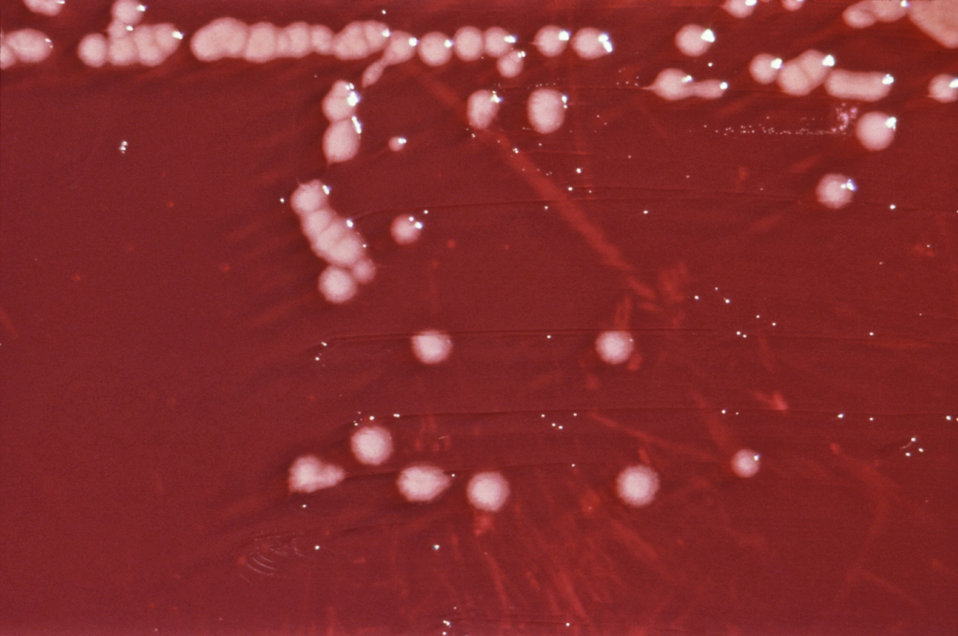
This photograph depicts the colonial growth pattern displayed by Pseudomonas aeruginosa bacteria, also known as Bacillus pyocyaneus, having been cultured on a Xylose Lysine Sodium Deoxycholate (XLD) agar plate.